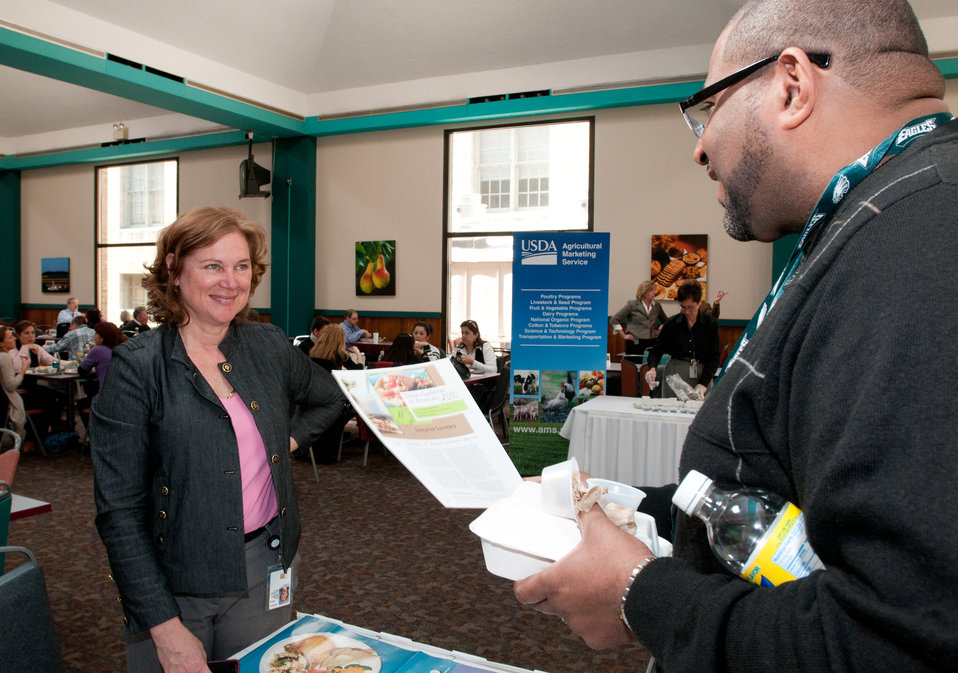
Information Technology Project Manger Leonard Kenon (right) listens to Nutritionist Elaine McLaughlin (left) as she talks about the web-based MyPyramid Tracker, an online dietary and physical activity assessment tool that provides information on diet quality, physical activity status, and provides related nutrition messages, and links to nutrient and physical activity information, while they were at the Department of Agriculture's celebration of the Dietary Guidelines for Americans 2010, an informational event in the Whitten Café in Washington, D.C., on Wednesday, March 2, 2011.